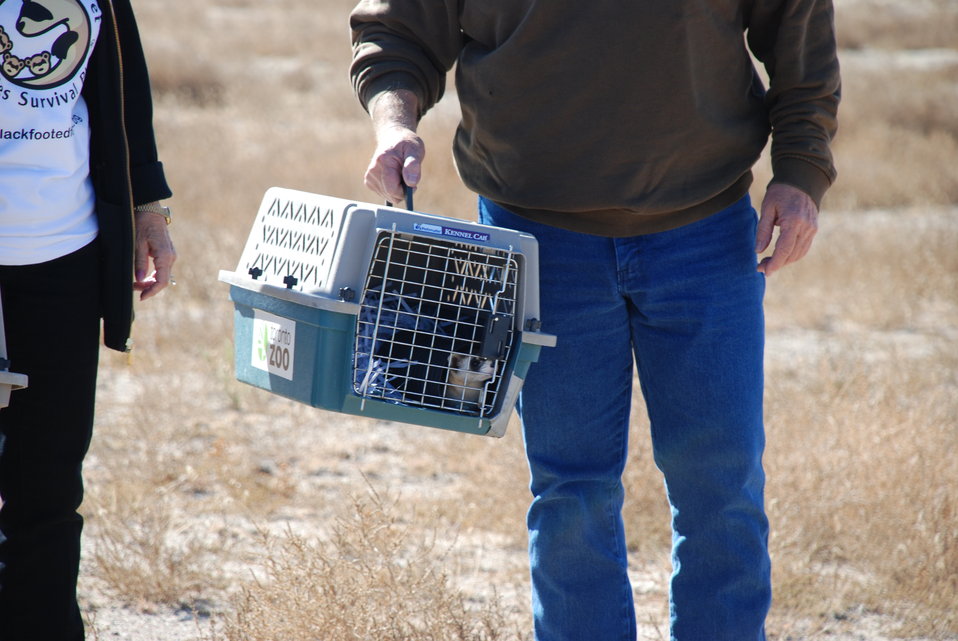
Black-footed Ferret Release

On Wednesday, October 30, 2013, thirty endangered black-footed ferrets were released onto cattle rancher Gary Walker's land, west of Pueblo, Colorado.

The release launched a potentially new way of preserving endangered species and was accomplished by way of a Safe Harbor Agreement (SHA). This SHA provides opportunities for private and Tribal landowners to volunteer their lands for reintroductions of this endangered species without affecting their land-use activities beyond mutually agreed-upon measures. It also extends these assurances to surrounding non-participating lands and other landowner interests. This SHA will be an important step in promoting the recovery of this iconic species.